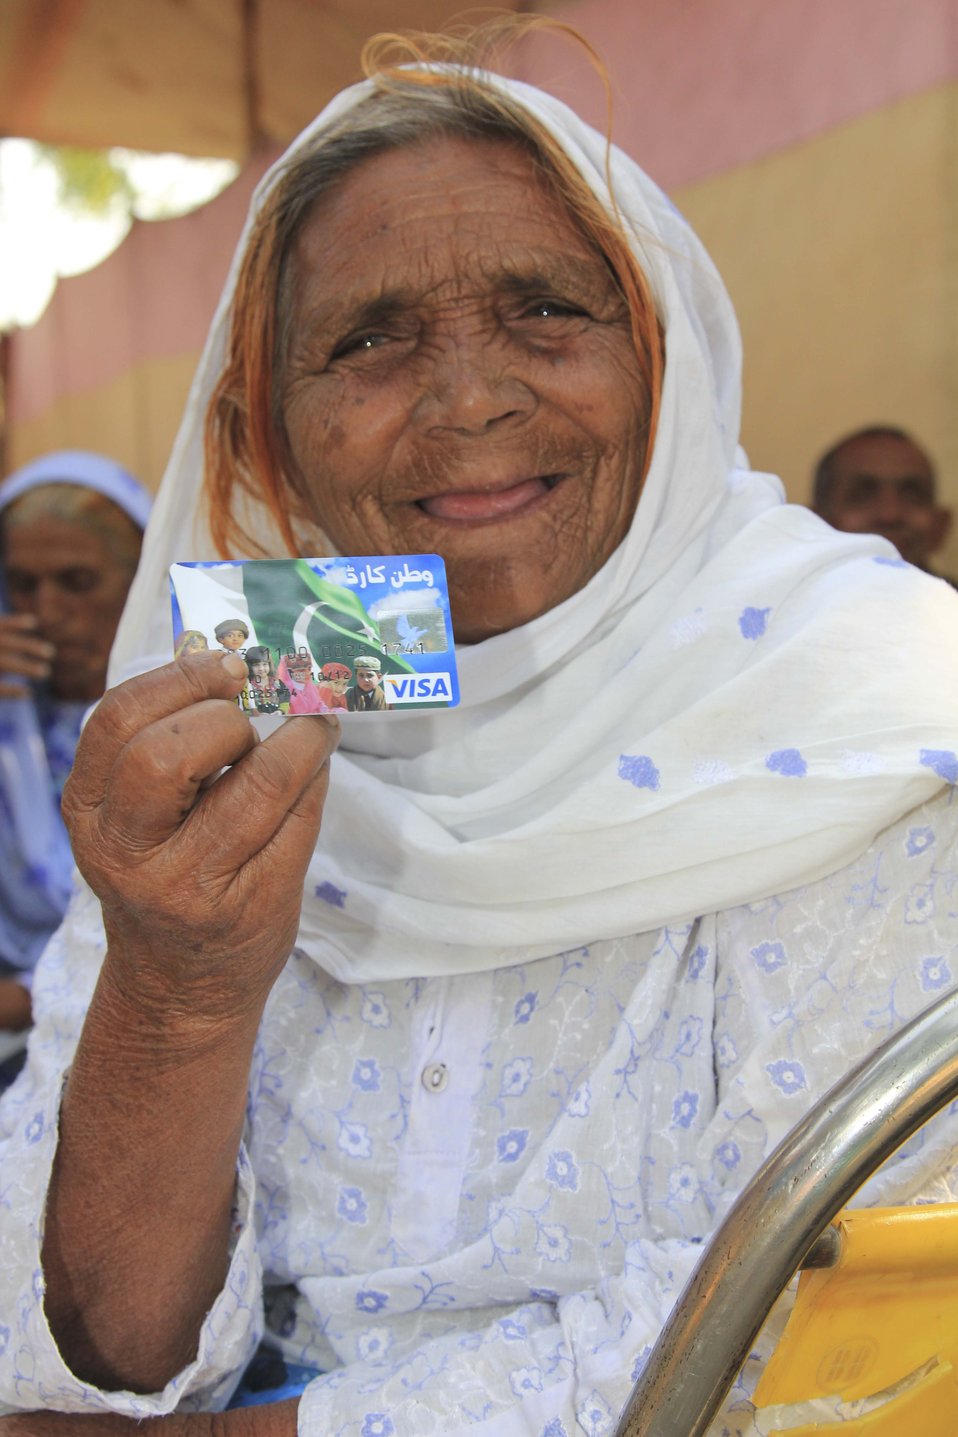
Citizens Damage Compensation Program